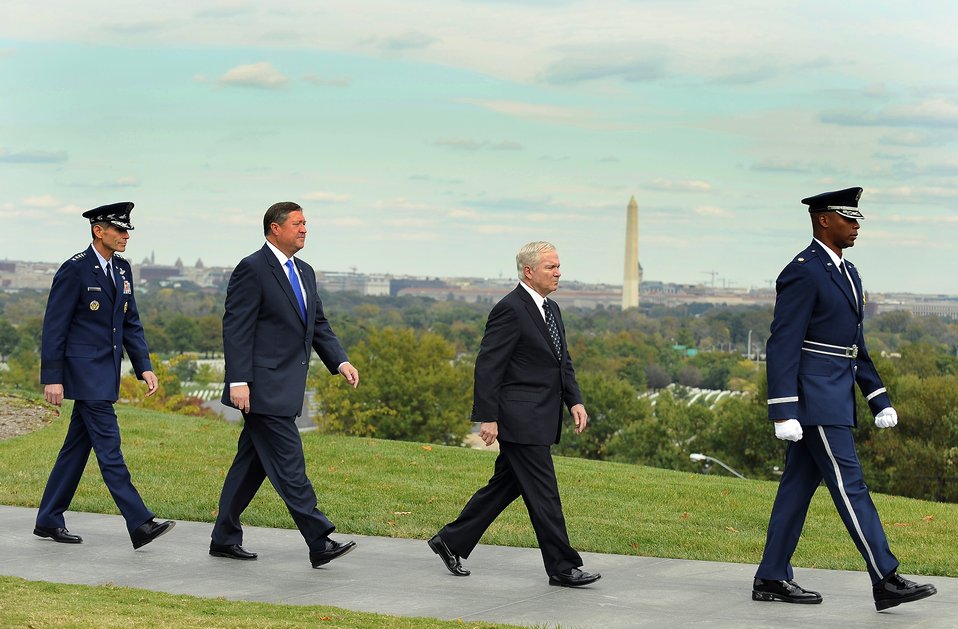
Secretary of Defense Robert M. Gates

U.S. Defense Secretary Robert M. Gates walks with Secretary of the Air Force Michael B. Donley and Air Force Chief of Staff Norton A. Schwartz prior to Secretary Donley's swearing in by Secretary Gates at the Air Force Memorial in Arlington, Va., Oct. 17.